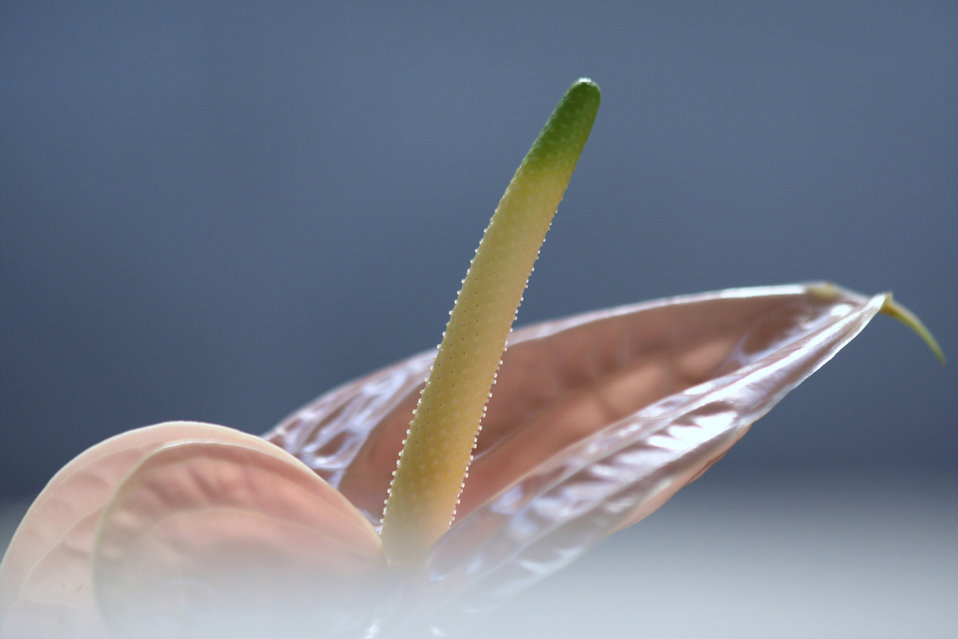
Anthurium

Flowers in the mist.